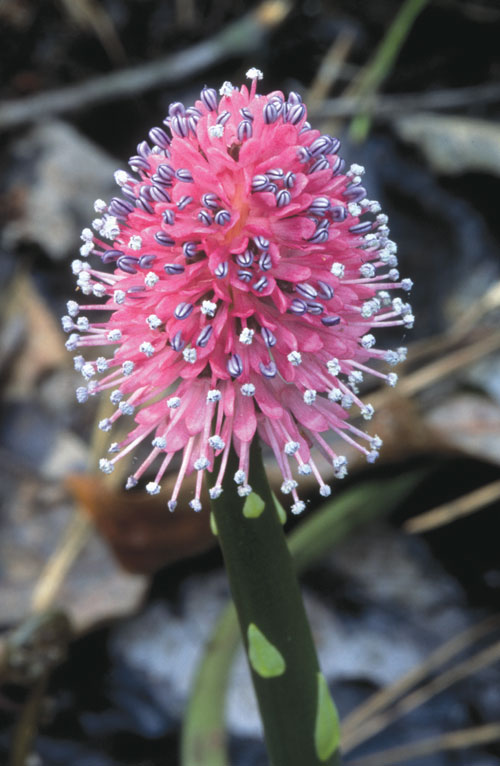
Photo of the Week - Swamp Pink (NJ)

Photo of the Week - 04/28/2010

This photo of swamp pink was taken in Cape May County, New Jersey.
Credit: Gene Nieminen/USFWS

Swamp pink was federally listed as a threatened species in 1988. It occurs in headwater streams and mountain bogs from New Jersey to Georgia.

A perennial member of the lily family, swamp pink has smooth, oblong, dark green leaves that form an evergreen rosette. In spring, some rosettes produce a flowering stalk that can grow over 3 feet tall. The stalk is topped by a 1 to 3-inch-long cluster of 30 to 50 small, fragrant, pink flowers dotted with pale blue anthers. The evergreen leaves of swamp pink can be seen year round, and flowering occurs between March and May.